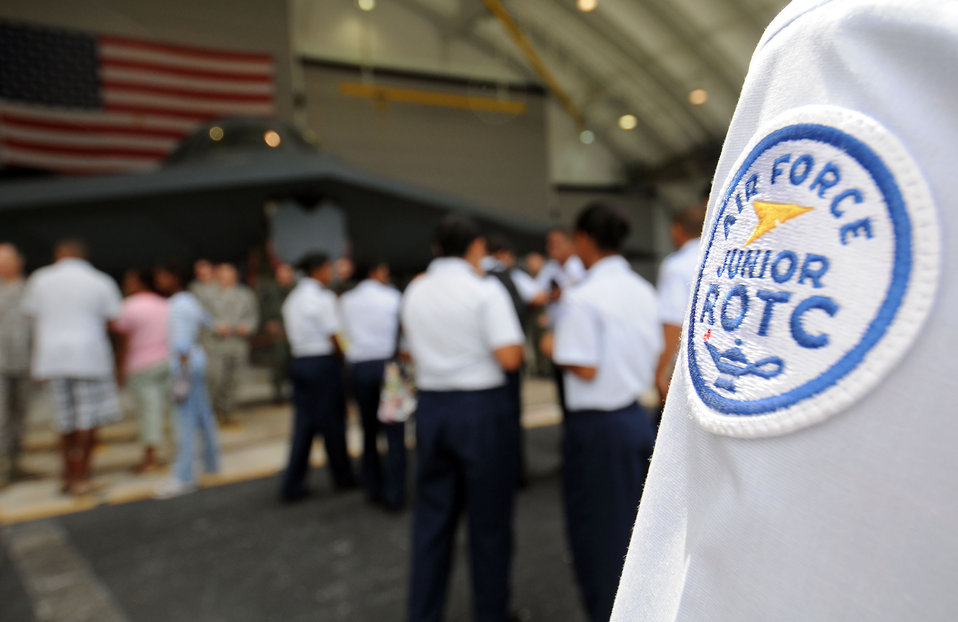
Andersen officials give up-close view of F-22, B-2

John F. Kennedy's Air Force Junior ROTC students gather around the B-2 Spirit on display for a quick photo and a brief description of the aircraft during the March 28 open house at the Andersen Air Force Base, Guam. More than 45 junior ROTC members came out to the base to receive a firsthand look at some of the Air Force's premier aircraft.